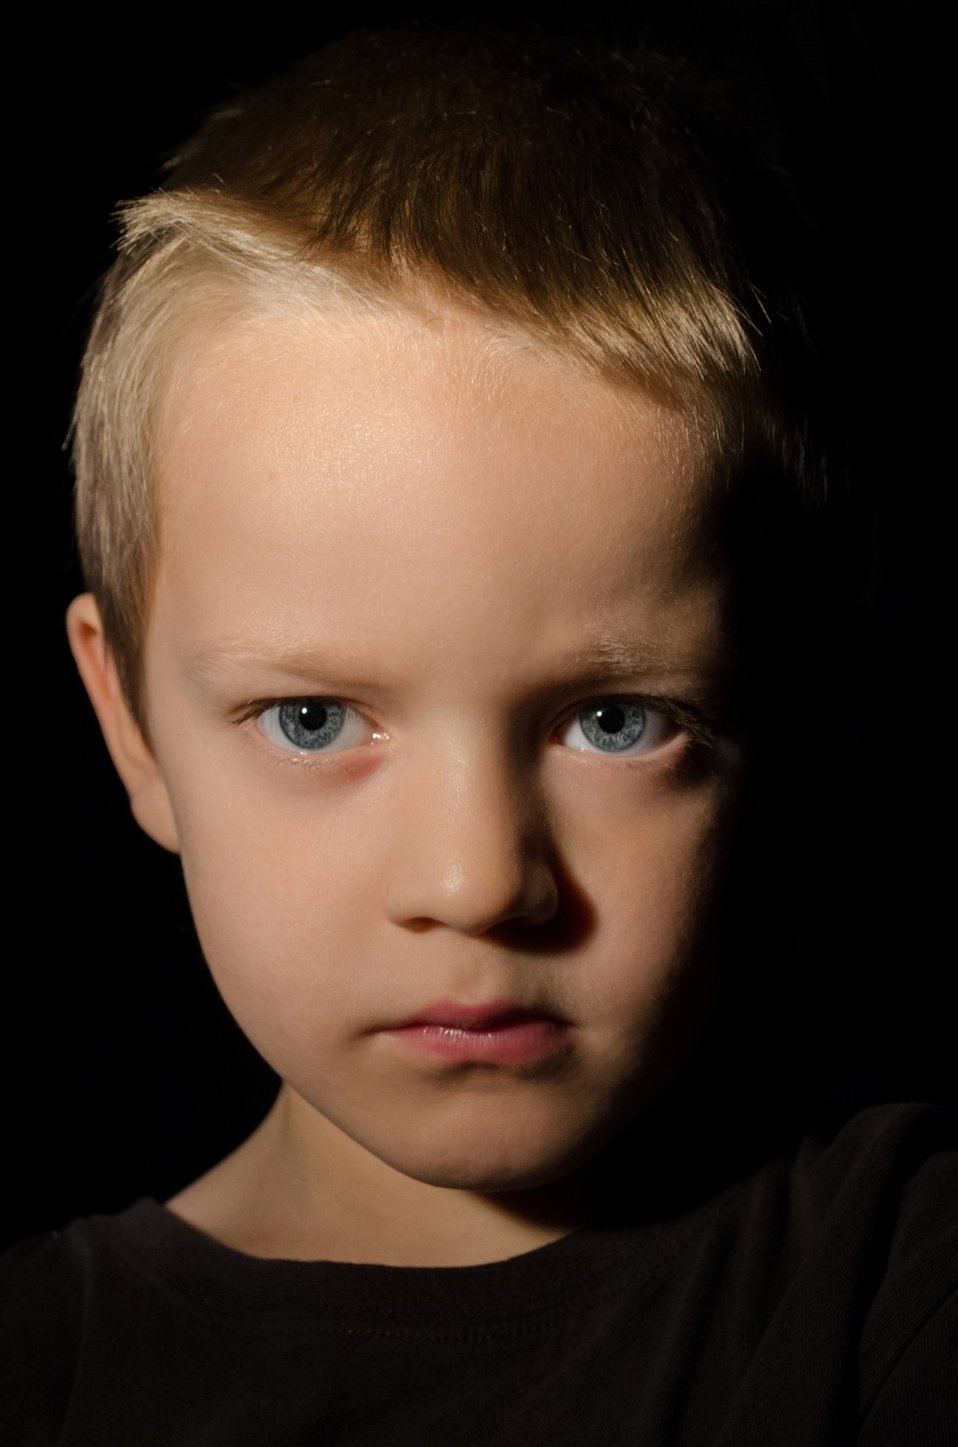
Child portrait.